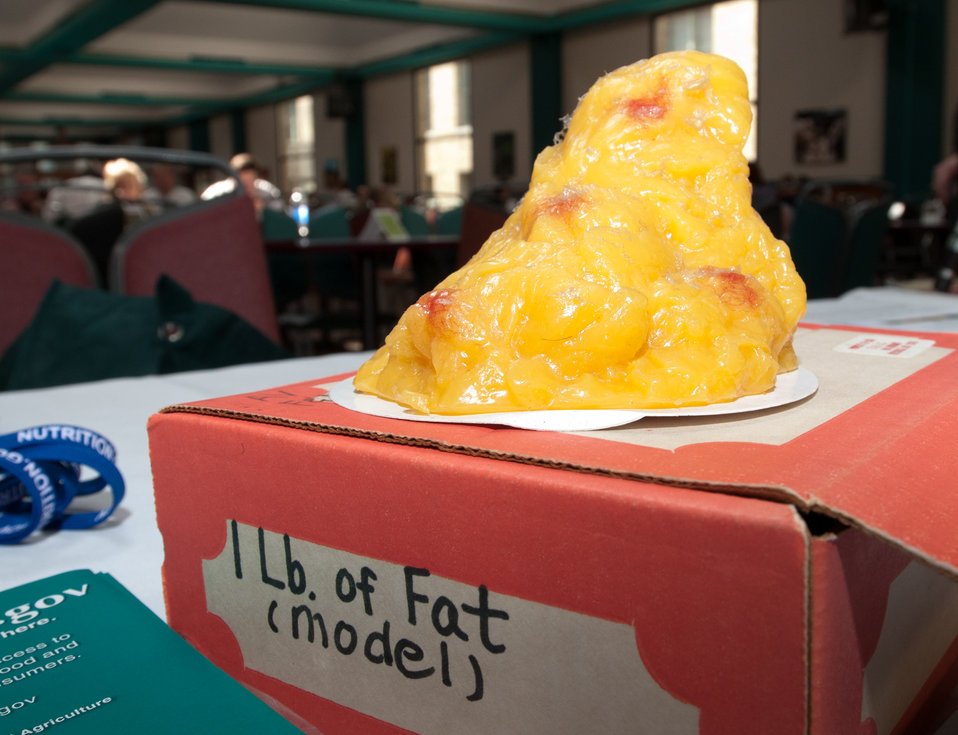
A model of one pound of fat serves as a motivator to eat healthy at the Department of Agriculture celebration of the introduction of the Dietary Guidelines for Americans 2010, an informational event in the Whitten Café in Washington, D.C.. on Wednesday, Mach 2, 2011. The event had representatives from Agricultural Marketing Service (AMS); Agricultural Research Service (ARS - including Food and Nutrition Information Center - FNIC, and Food Safety Information Center – FSIC); Economic Research Service (ERS); Food, Nutrition & Consumer Services (FNCS); Food Safety and Inspection Service (FSIS); National Institute of Food and Agriculture (NIFA); USDA Office of Operations (Departmental Management); Food and Drug Administration (FDA); and Sodexo.